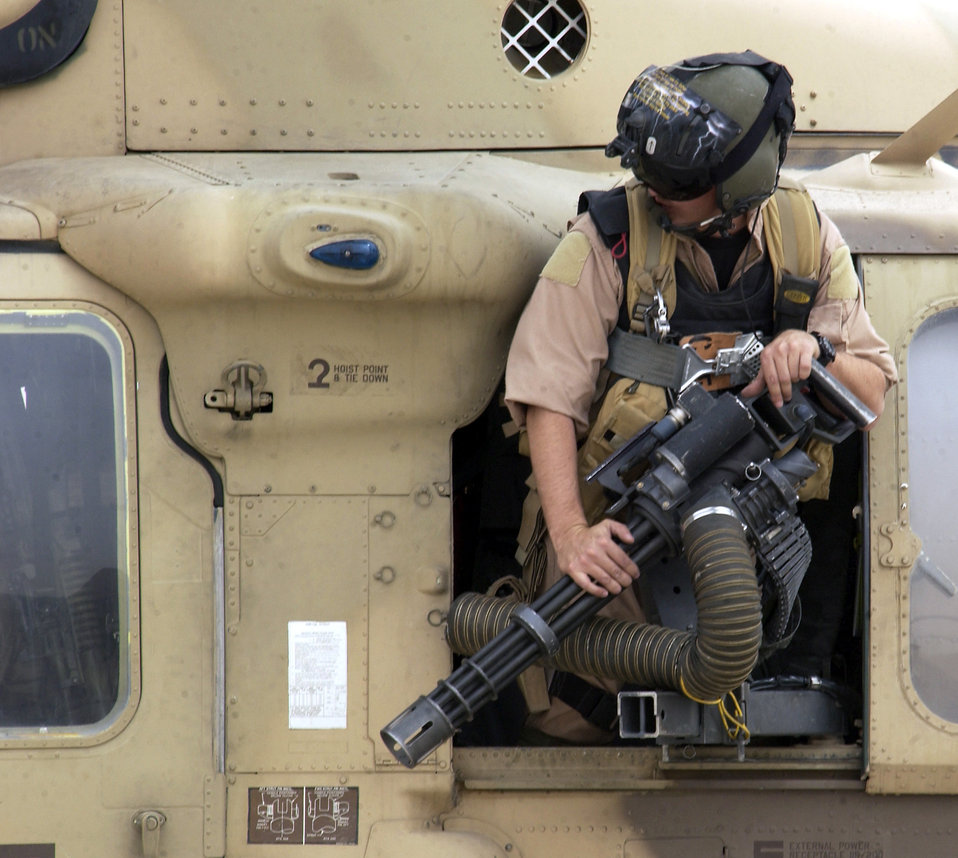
Flight engineer ready

OPERATION IRAQI FREEDOM -- A HH-60G Pave Hawk helicopter flight engineer from the 301st Rescue Squadron prepares for a mission April 8 at a forward deployed location in Iraq during Operation Iraqi Freedom.